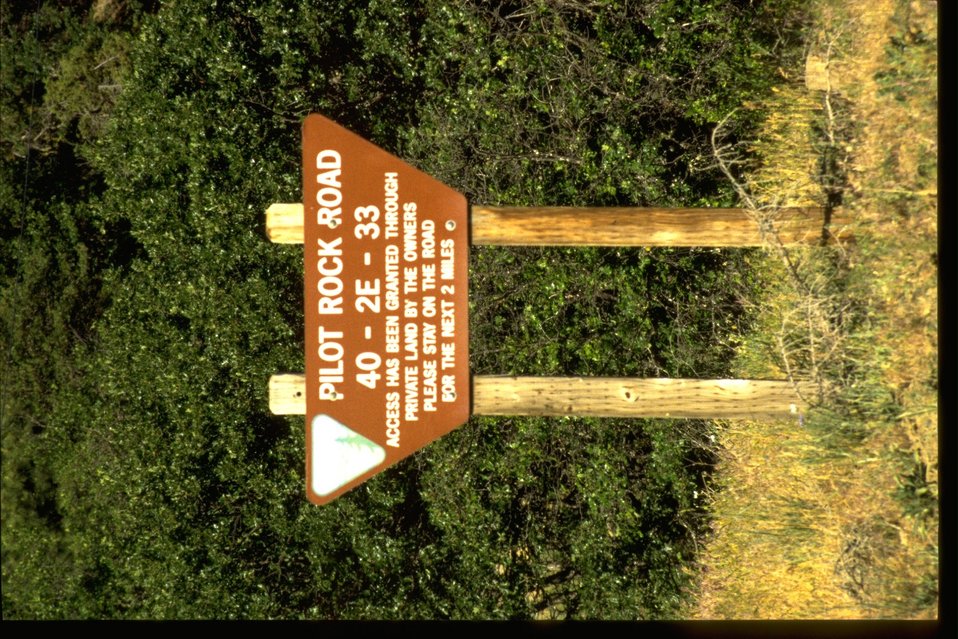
Sign on Pilot Rock Road.